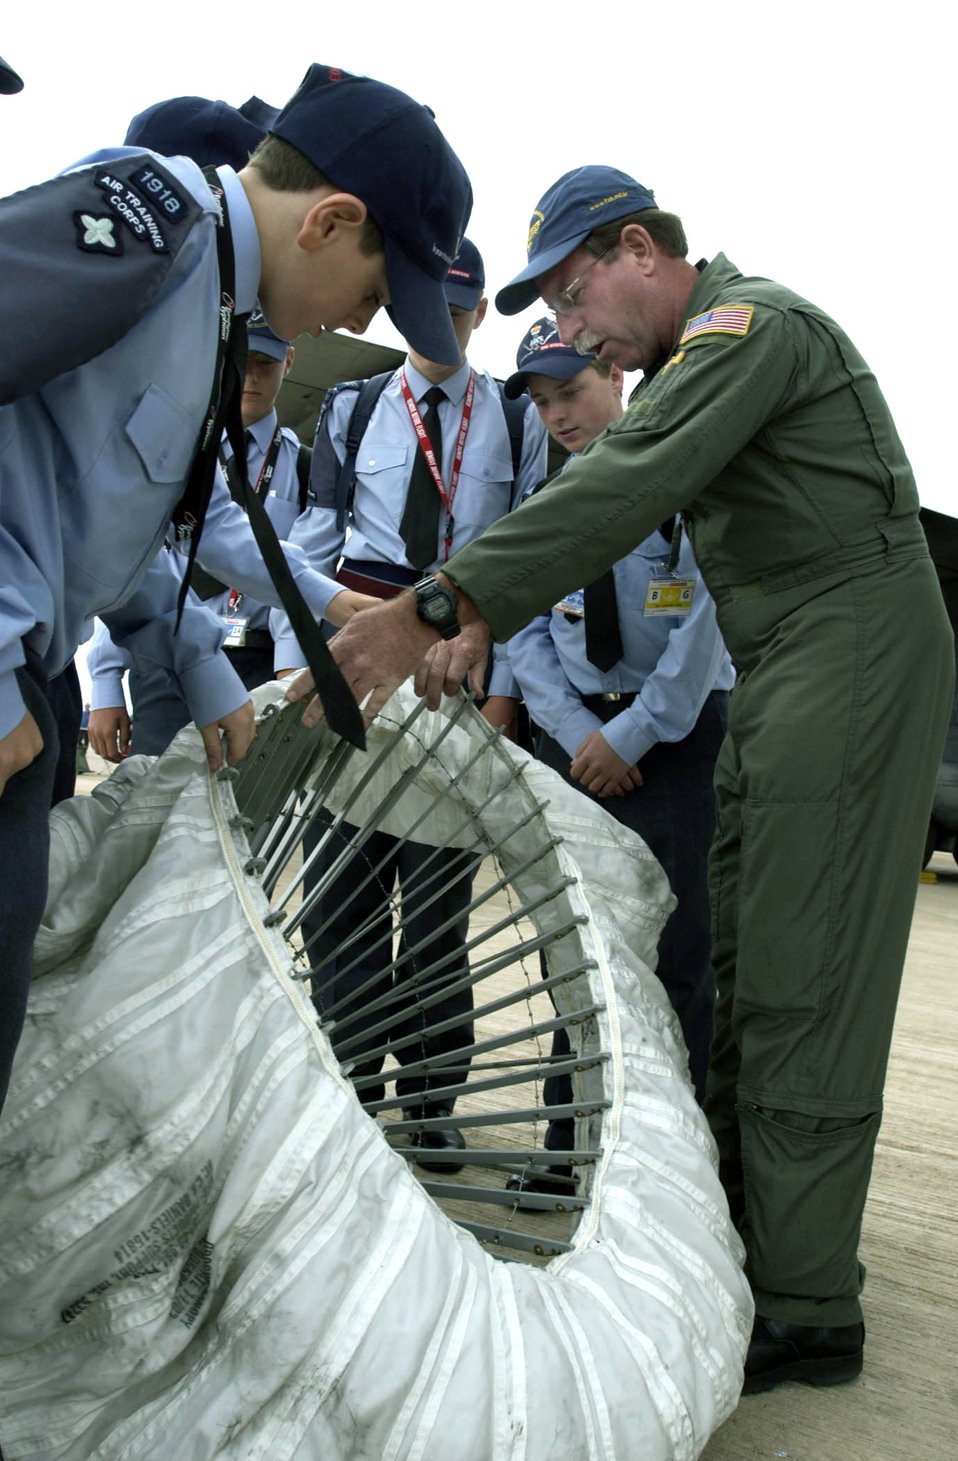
A revealing tattoo

ROYAL AIR FORCE FAIRFORD, England -- Master Sgt. Bud Flaherty explains the workings of a MC-130E Combat Talon I refueling basket to British Air Training Corps Cadets during the Royal International Air Tattoo here July 16 to 18. More than 100,000 people visited the air show daily to see 350 aircraft from 15 nations and 30 different service branches. Sergeant Flaherty is a loadmaster from the 711th Special Operations Squadron at Duke Field, Fla.